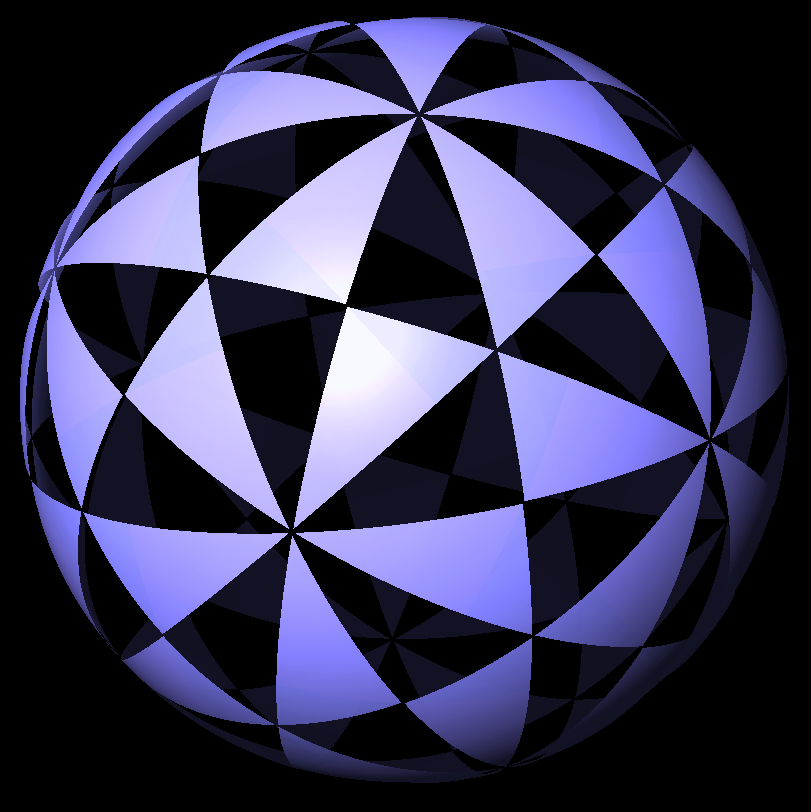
KaleidoTile, Topology and Geometry Software, Jeff Weeks Spherical domains for tetrahedral symmetry